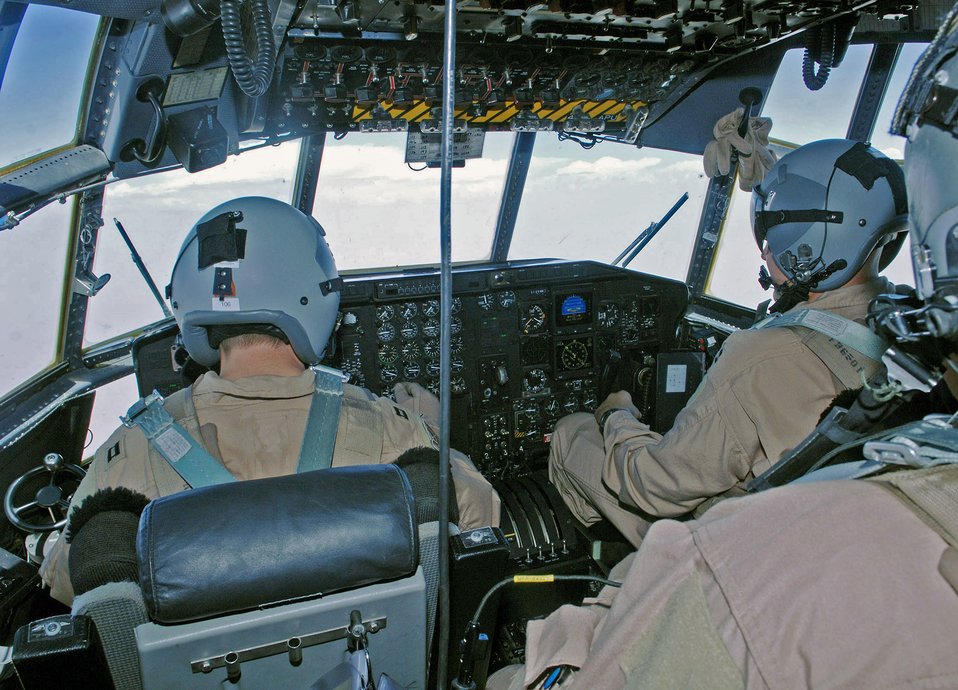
C-130 crews changing lives one mission at a time

Capt. Scott Simon (left) and Capt. John Malley (right) tend to the controls of a C-130 Hercules during an aeromedical evacuation and airlift mission June 22 from Bagram Air Base, Afghanistan. Captains Simon and Malley are 774th Expeditionary Airlift Squadron C-130 pilots deployed from Wyoming's Air National Guard from Cheyenne, Wyo.